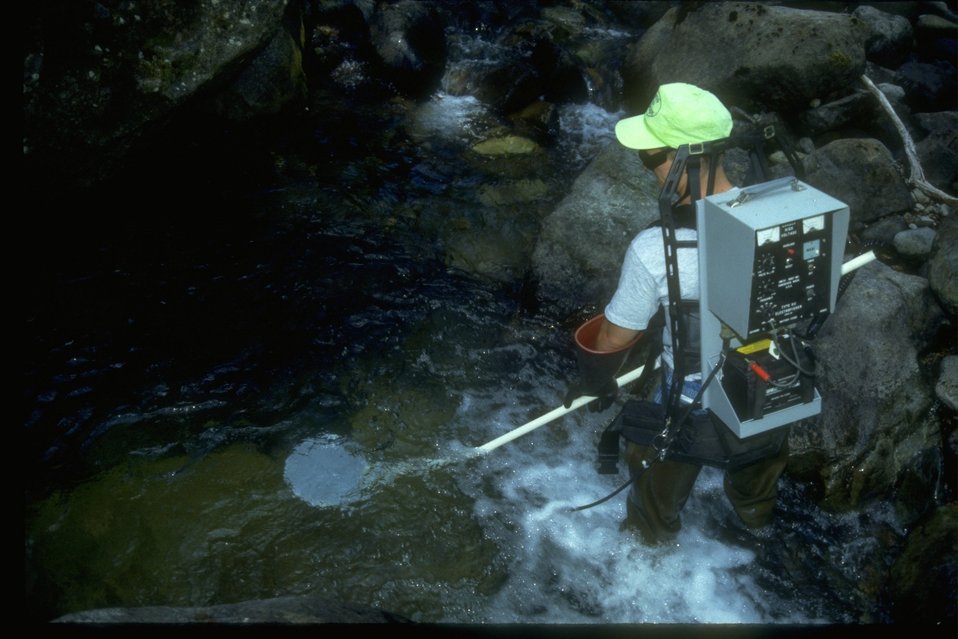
Worker is electro shocking fish.